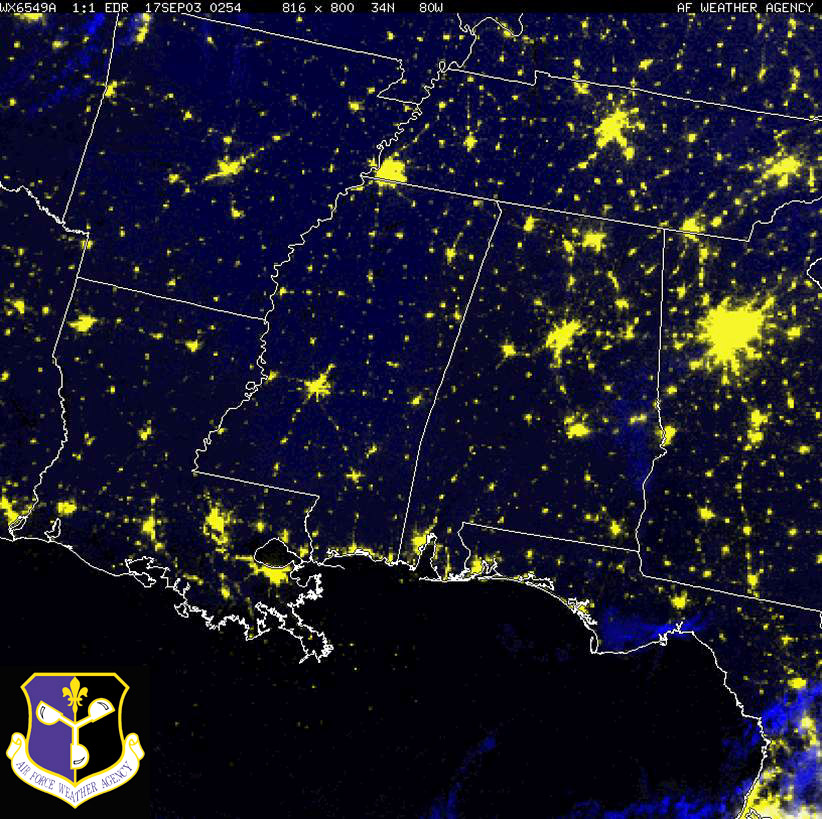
Power outages across Gulf Coast

SATELLITE IMAGE - This file image was taken Sept. 17, 2003, and shows the city lights in the Gulf Coast clearly visible.